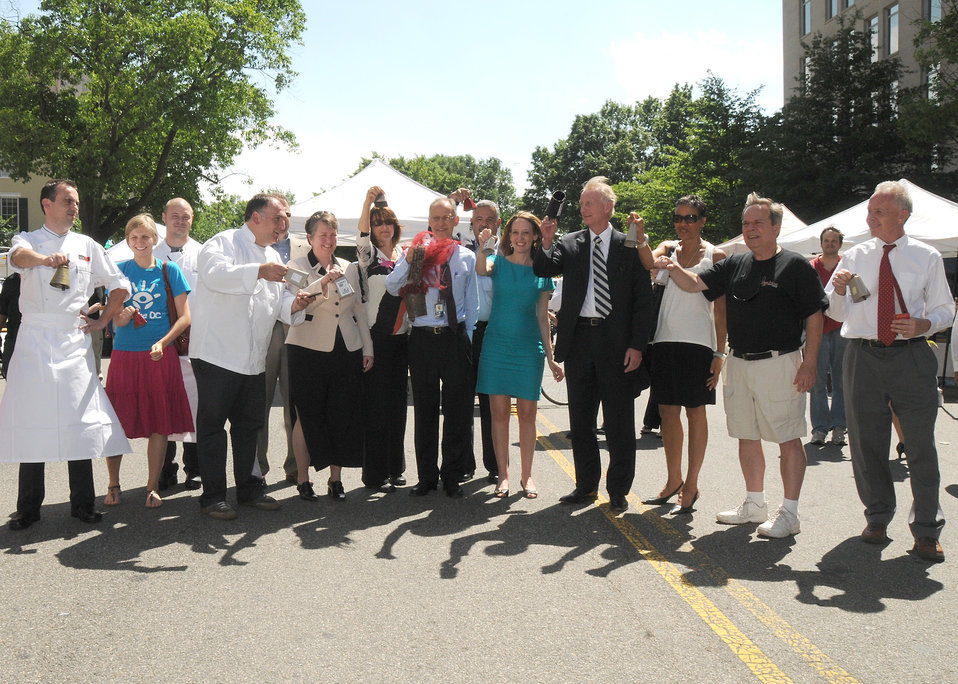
Agriculture Deputy Secretary Kathleen Merrigan opens the Freshfarm Market on Vermont Avenue in Washington, D.C., near the White House on Thursday, May 6, 2010. (L to R Chef at Potenza Jason Mayle, Farmfresh volunteer, Chef at Ici Urban Bistro Olivier Perret, Superstar Chef Jose Andres, Vice President of Operations Partner with Stir Food Group Ralph Rosenberg, Agriculture Deputy Secretary Kathleen Merrigan, Farmfresh Director Ann Yonkers, Vice President of Operations Partner with Stir Food Group Ralph Rosenberg, Farmfresh volunteer, Agricultural Marketing Service (AMS) Administrator Rayne Pegg, Ward 2 Council member Jack Evans, Farmfresh volunteer, Dupont Circle Advisory Neighborhood Commissioner 2B Mike Silverstein, and Downtown DC Business Improvement District (BID) Executive Director Richard Bradley). USDA photo 10di1348-56.